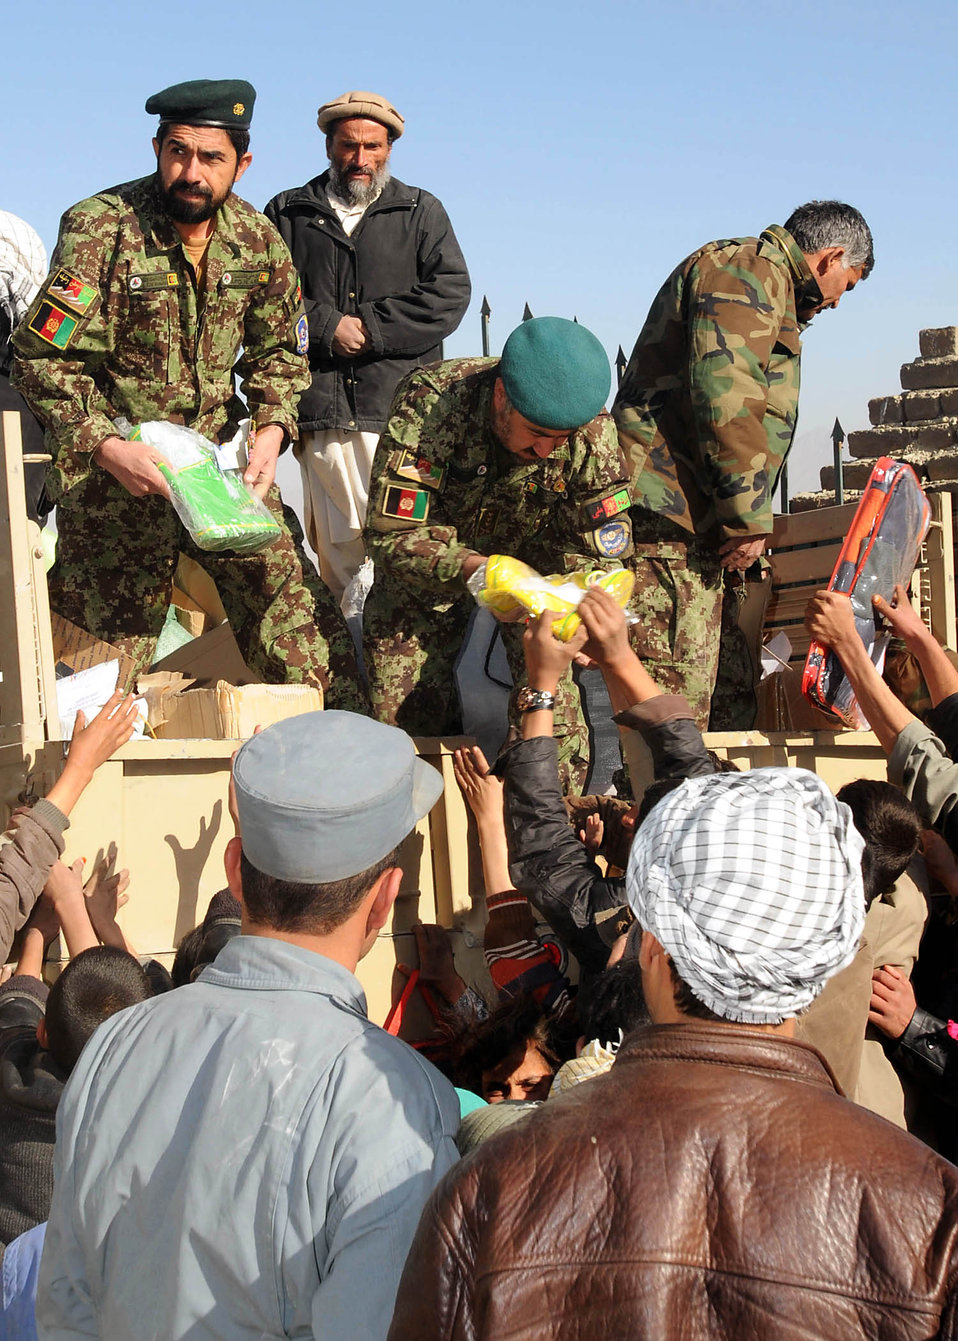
Afghan air force members distribute supplies to nearby town

Members of the Afghan air force distribute supplies to children and their families Dec. 22, 2010, in a village north of Kabul.